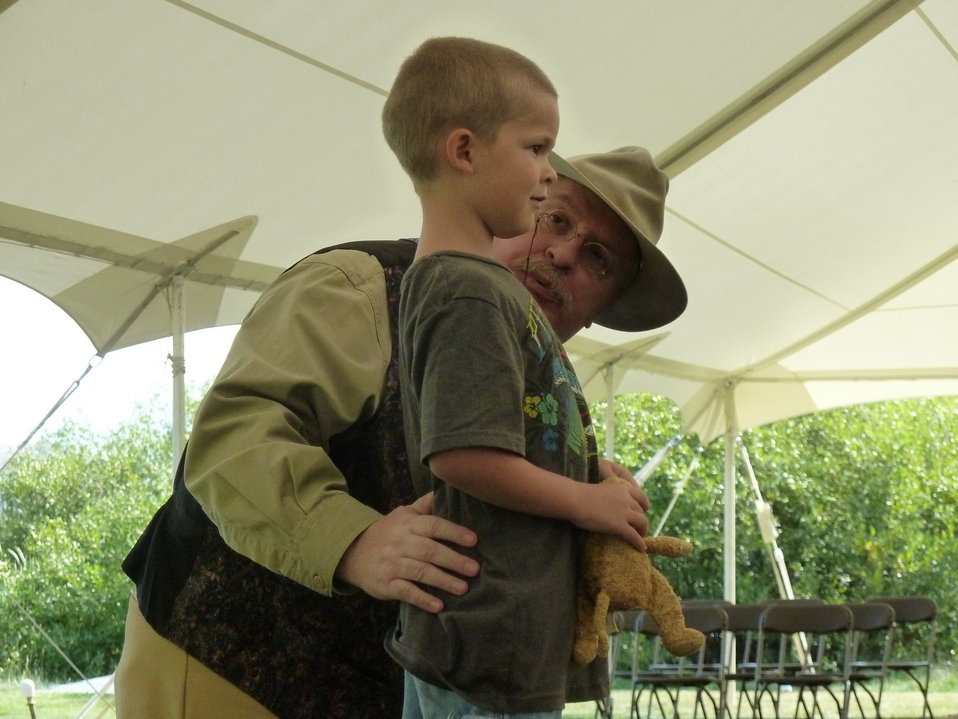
The Young and the Old

Theodore Roosevelt impersonator Case Hicks gave two full performances during the National Elk Refuge's centennial weekend, as well as a short talk at the refuge's centennial ceremony on August 10. Here, 'Roosevelt' receives help from a young member of the audience during one of his shows.

Credit: USFWS / Betty Mulcahy, National Elk Refuge volunteer